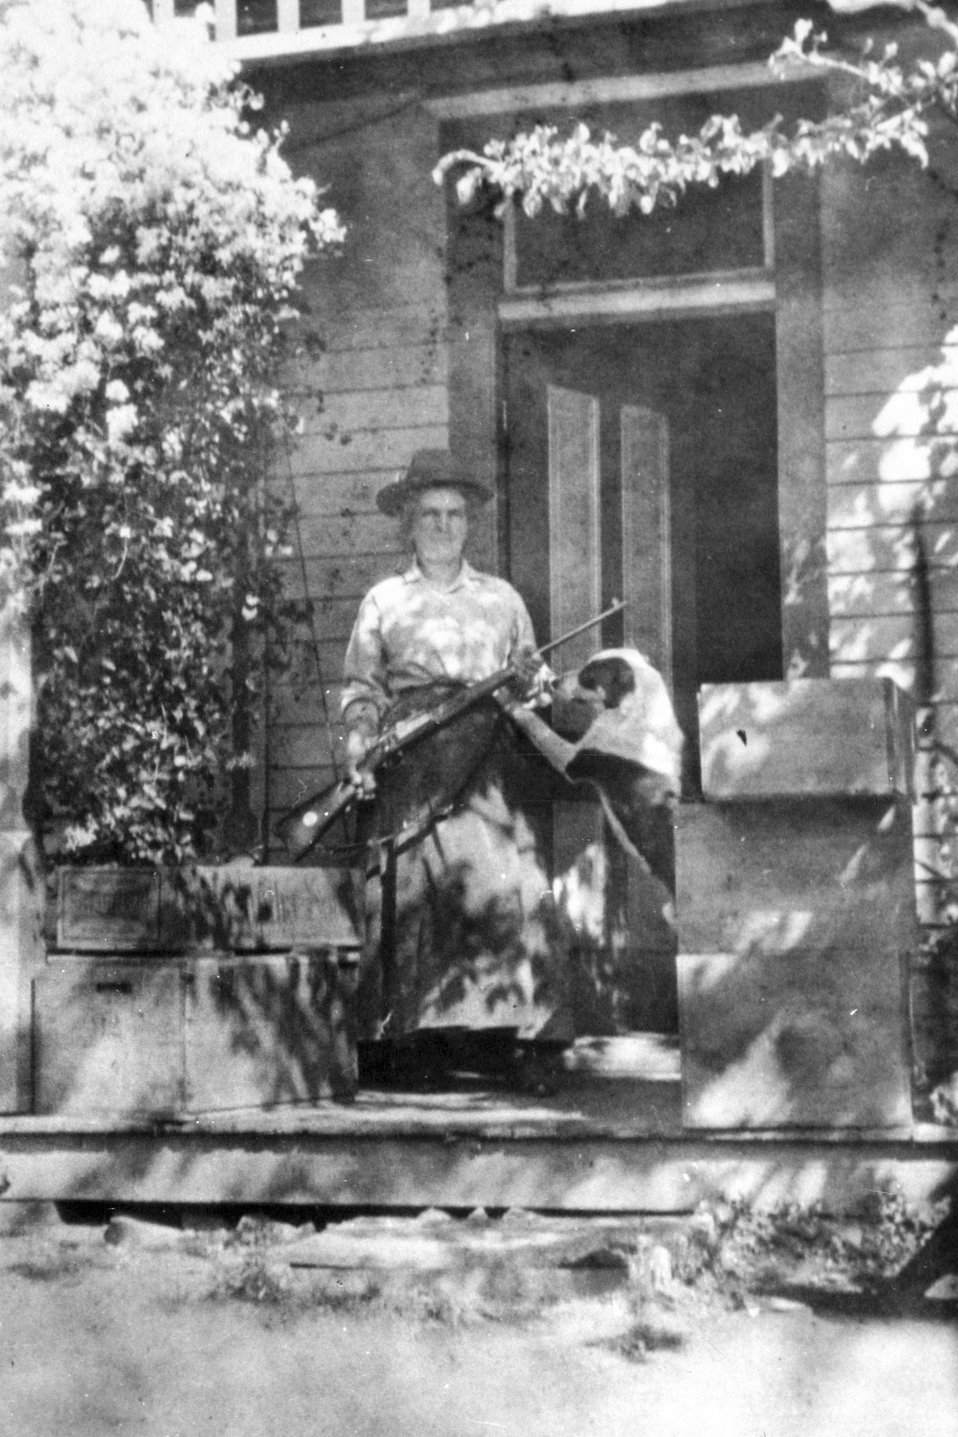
Annie Billings front porch at the Billings' Ranch.